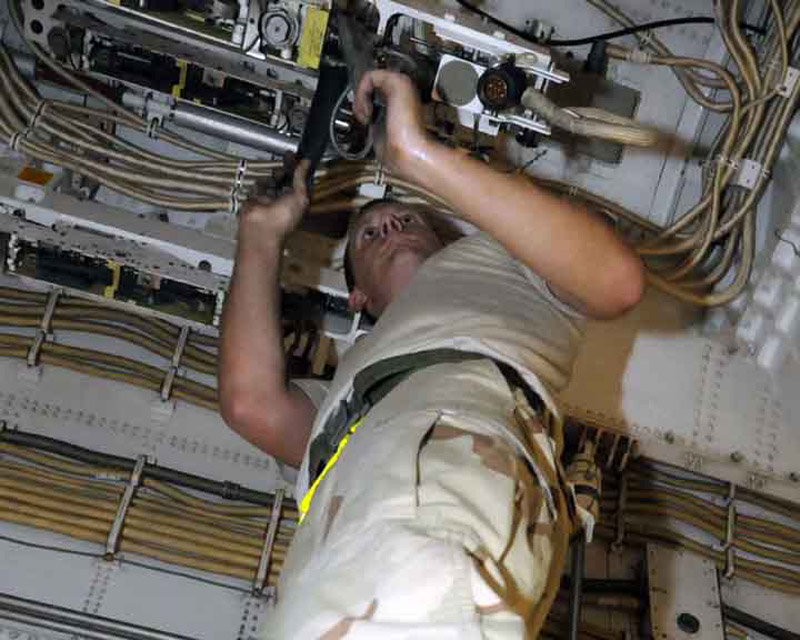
Nocturnal workers

Senior Airman Isaac Loren preps a bomb mod for loading May 29 in Southwest Asia. Airman Loren is assigned to the 37th Aircraft Maintenance Unit and works noon to midnight. The B-1B Lancer maintainers work around the clock to keep the aircraft flying.